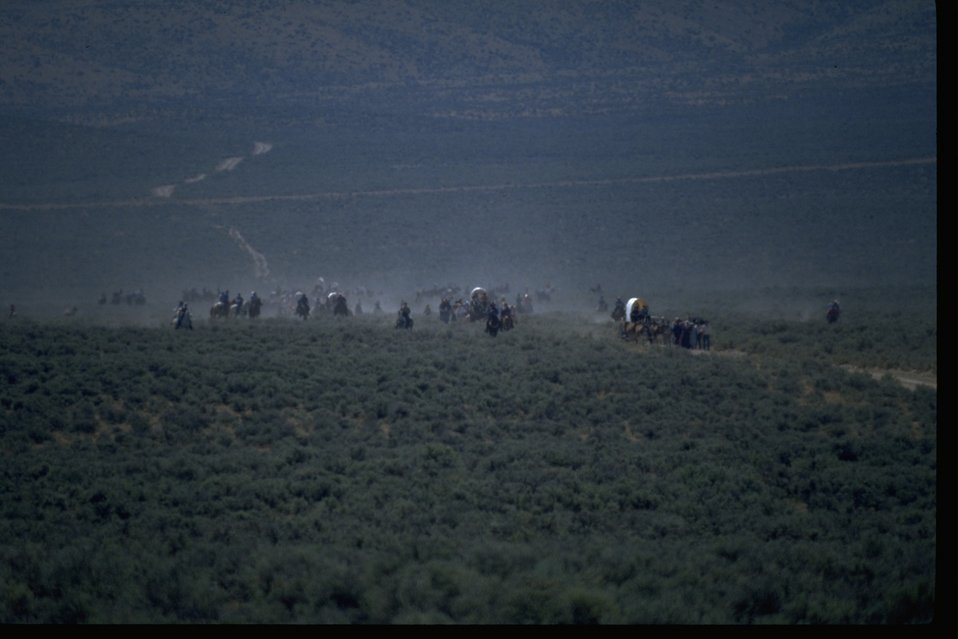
Wagon Train Scene on Virtue Flat.